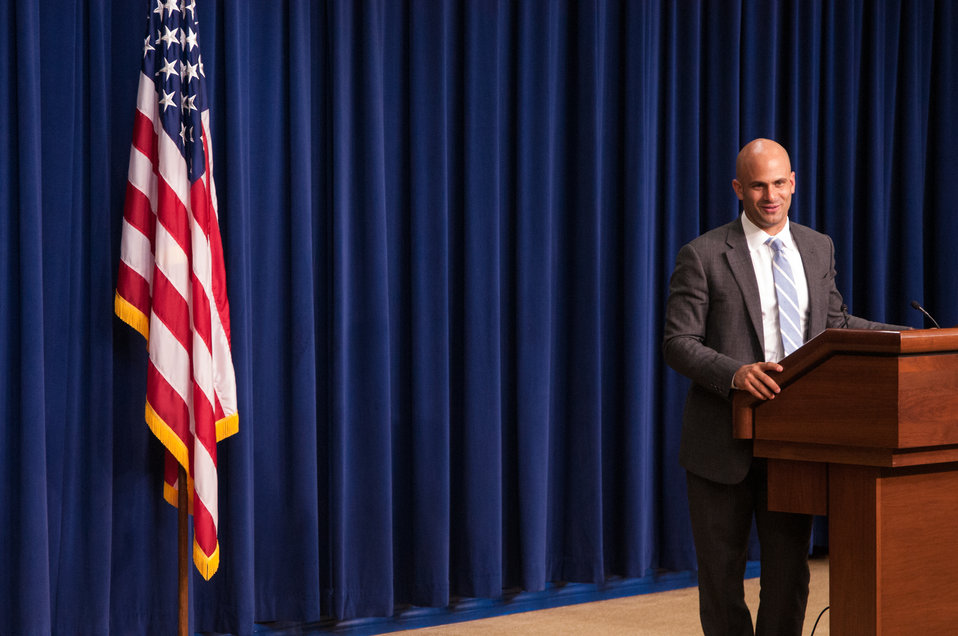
White House Chef Sam Kass speaks at a meeting of the White House Rural Council to an audience of the National State President’s Conference of the FFA on Wednesday, Jul. 24, 2013 in Washington, D.C. Chef Kass discussed nutrition and agriculture topics.